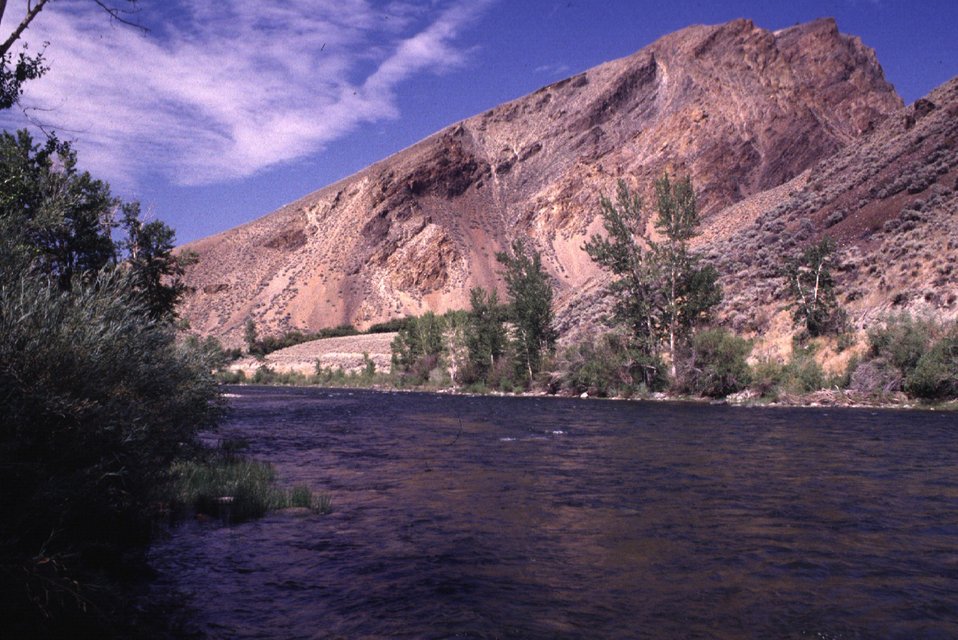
Salmon River Scenic Salmon Field Office UCSC Upper Columbia Salmon Clearwater District